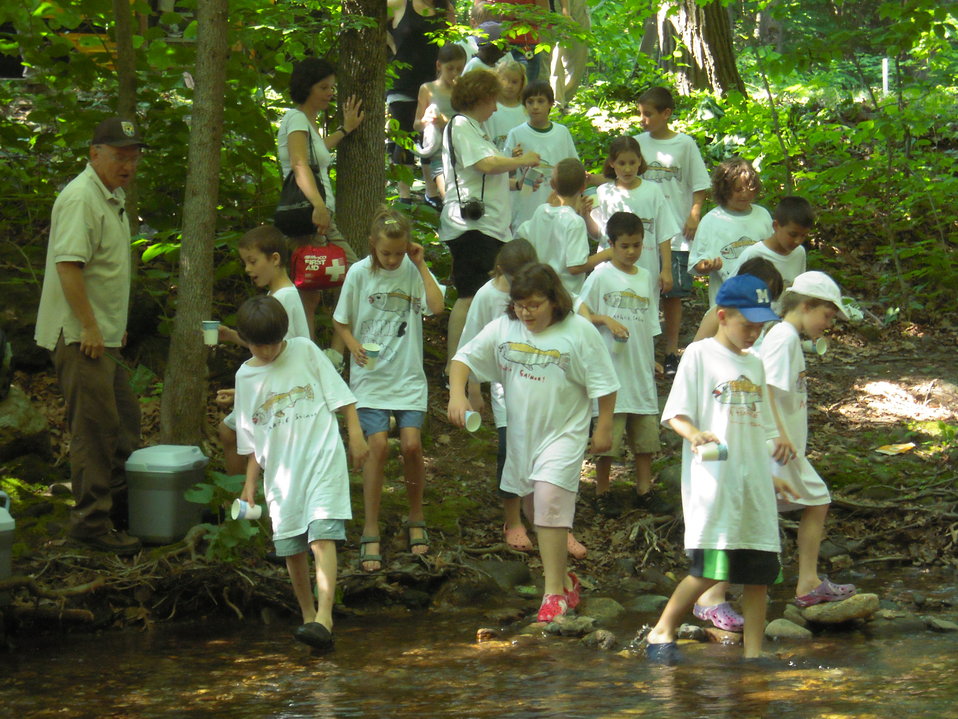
Kids arrive at Saw Mill River